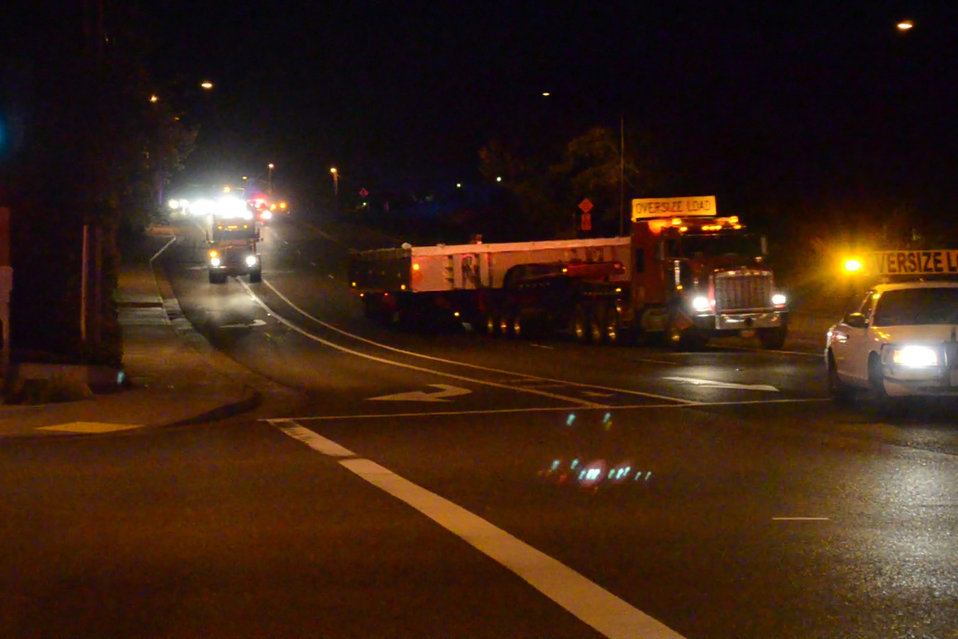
First giant gate arrives for Folsom Dam auxiliary spillway

A 100-foot-long flatbed truck carrying the first of 12 giant gates for the new auxiliary spillway at Folsom Dam prepares for a slow turn from Folsom-Auburn Road onto Folsom Lake Crossing in Folsom, Calif., March 13, 2014, after a 600-mile journey from the Oregon Iron Works facility in Vancouver, Wash. The auxiliary spillway project is part of the Joint Federal Project, a $900-million cooperative effort to improve the safety of Folsom Dam and reduce flood risk for the Sacramento area. (U.S. Army video image by Todd Plain/Released)